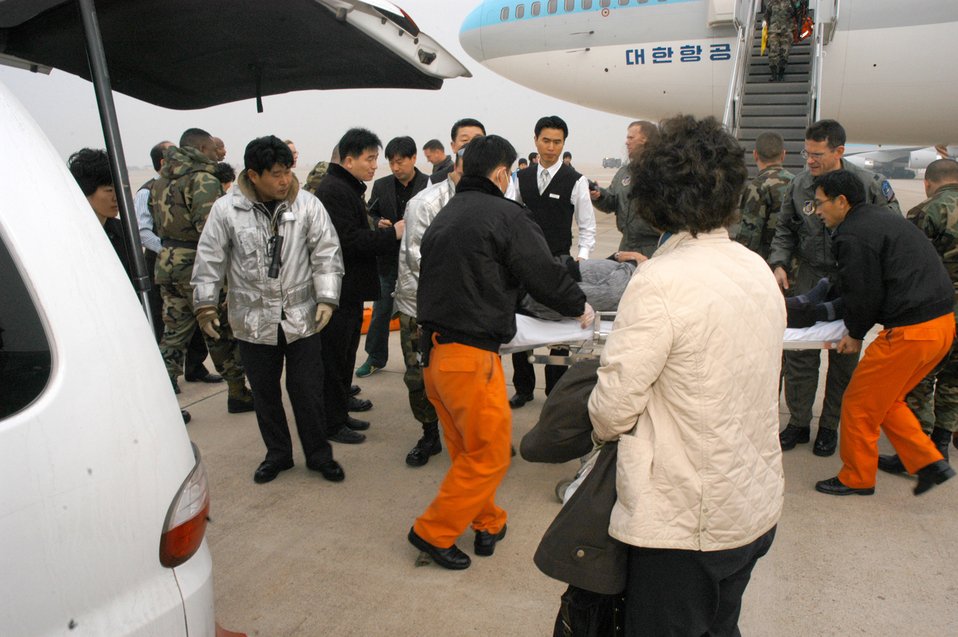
Two Korean Airline jets divert to Kunsan

Medical and security personnel rush a 65-year old Korean man needing medical attention to an ambulance after his Korean Airline flight was diverted to Kunsan from Incheon International Airport. The passenger airliner, with 274 people on board, diverted to Kunsan because of poor weather conditions at Incheon. The Korean man was transported to Kunsan Medical Center in downtown Kunsan City. The passengers were offered bottled water as they waited to take off, and the aircraft was refueled by Air Force personnel.